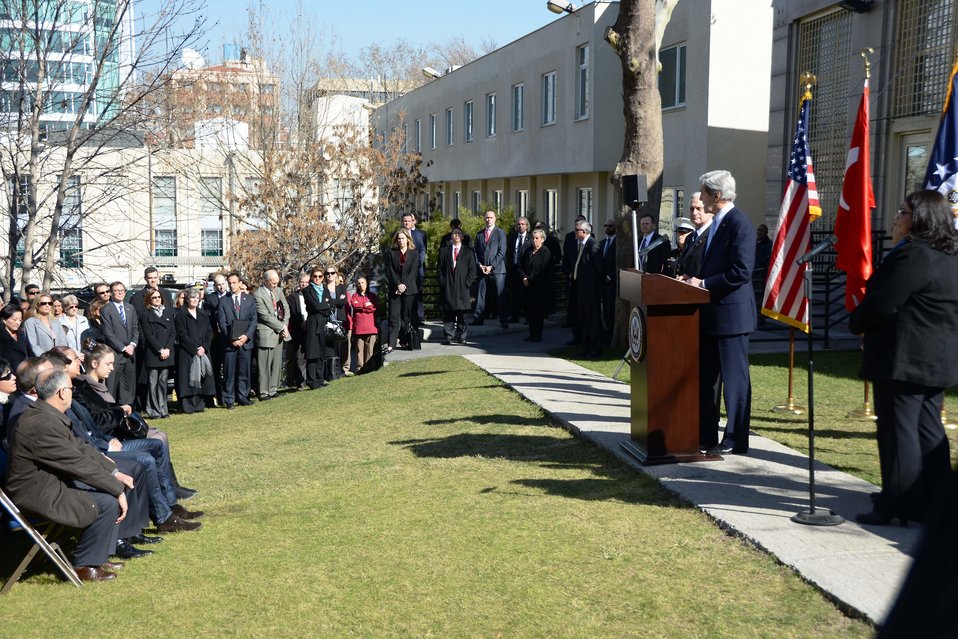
Secretary Kerry Honors Embassy Guard Akarsu

U.S. Secretary of State John Kerry delivers remarks at a memorial ceremony in honor of Embassy guard Mustafa Akarsu at the U.S. Embassy in Ankara, Turkey, on March 1, 2013.